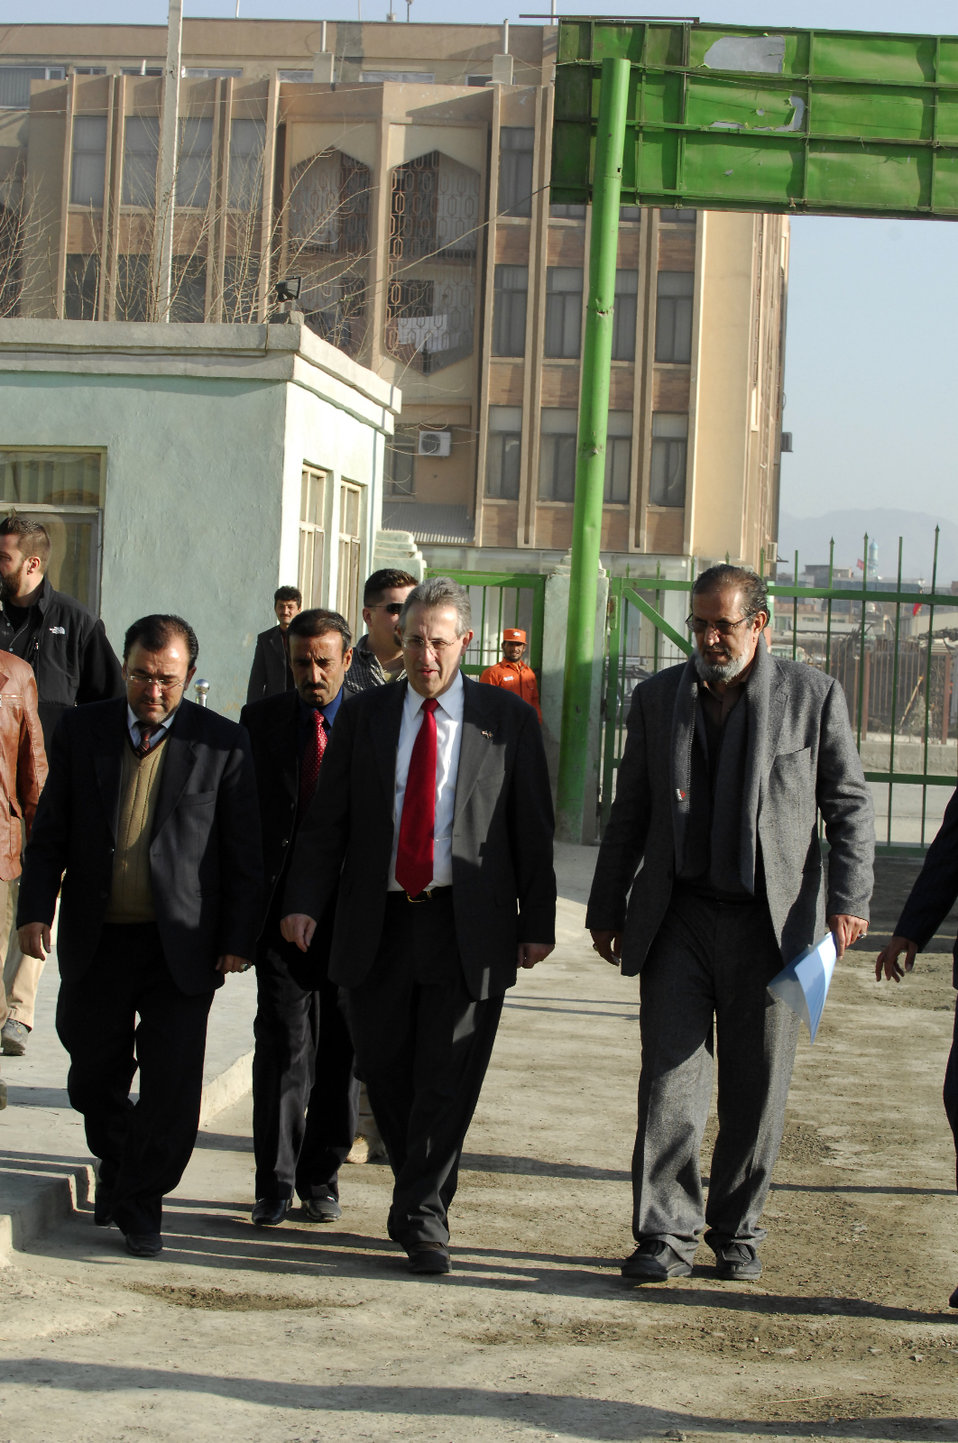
Care76